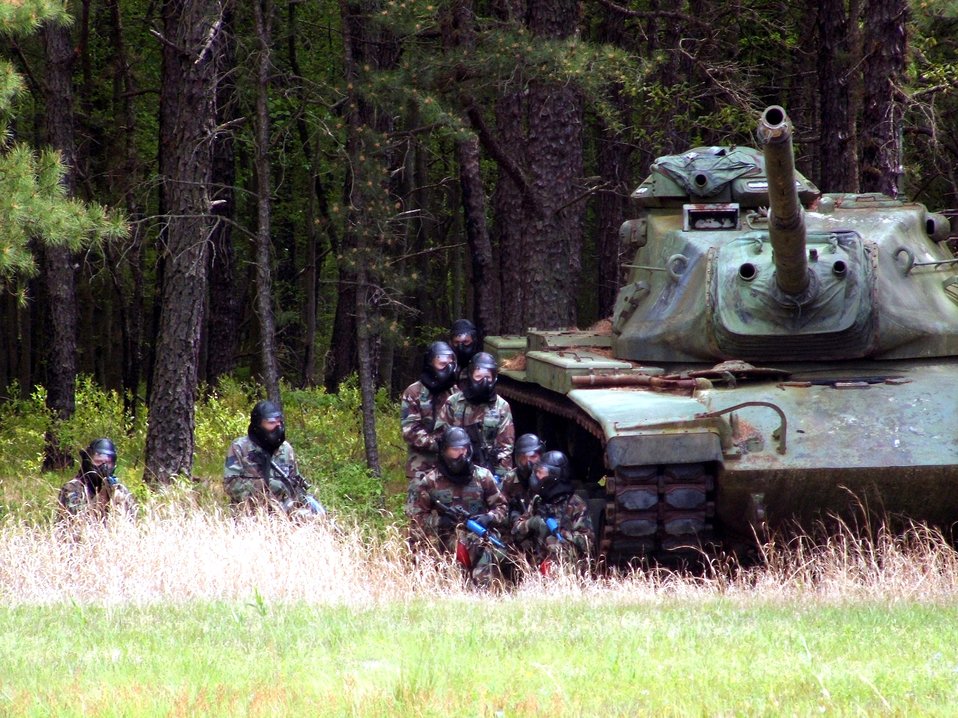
Phoenix Raven Airmen are a special breed

Phoenix Raven course students duck behind cover during use-of-force training here May 17, 2006, at Fort Dix, N.J. Raven students, who include Air Force security forces, Navy masters at arms and Army military police, train in combat first aid, tactical self defense and aircraft security. The course is taught by instructors from the Air Mobility Warfare Center's 421st Combat Training Squadron.